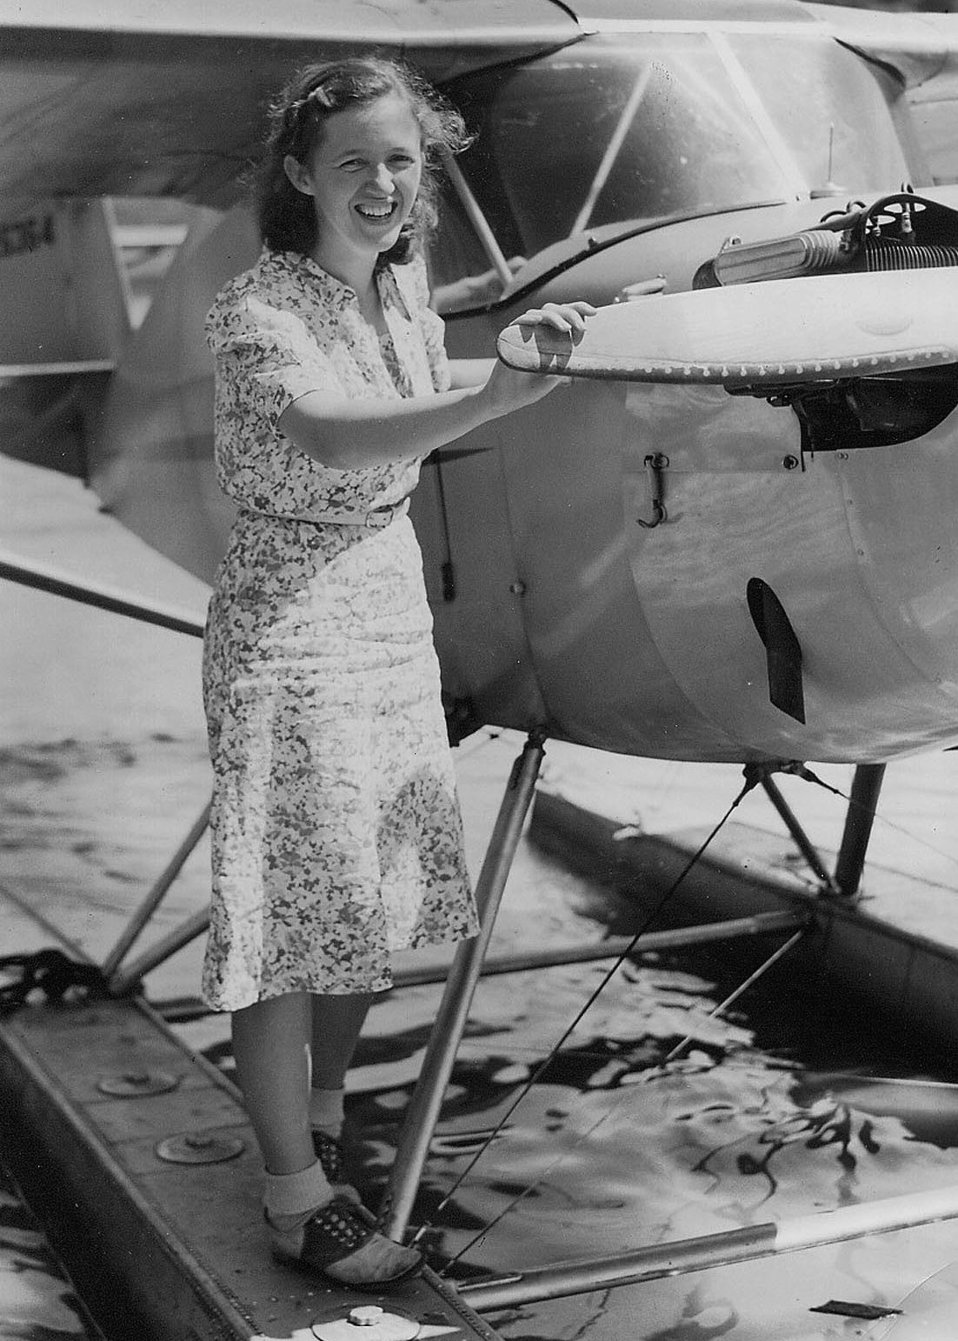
Flying 'bug' bites WASP early

1940's -- CHARLESTON, W. Va. -- Before attending Women's Airforce Service Pilots training, Marty Volkomener used her lunch hours to learn to fly seaplanes on the Kanawha River here.